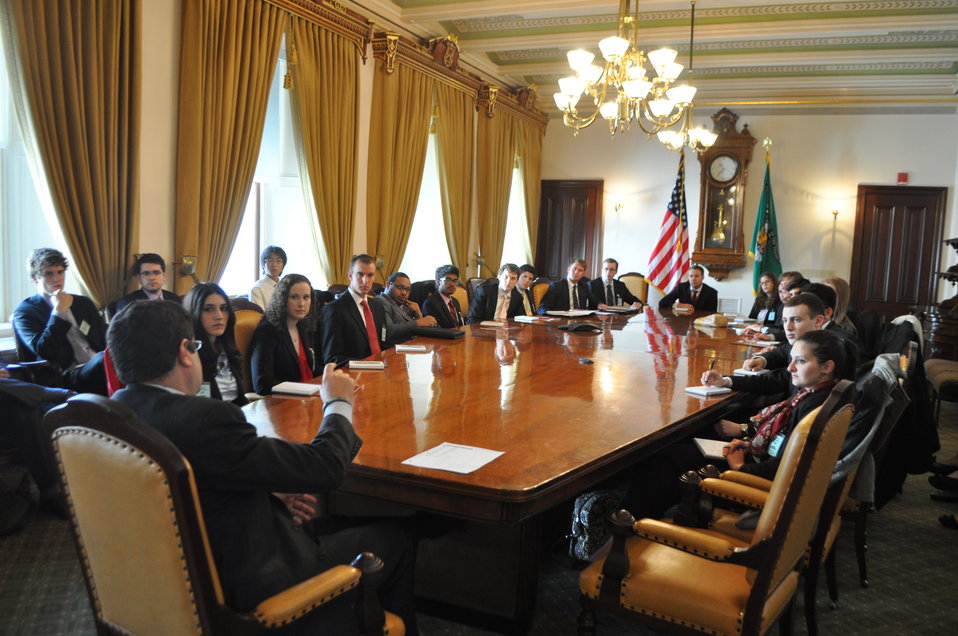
Deputy Secretary Neal Wolin takes questions from Fordham University students

A group of students from Fordham University in New York visited the Treasury building and met with Deputy Secretary Neal Wolin for a candid discussion about the Department’s wide-ranging work on March 27, 2013..